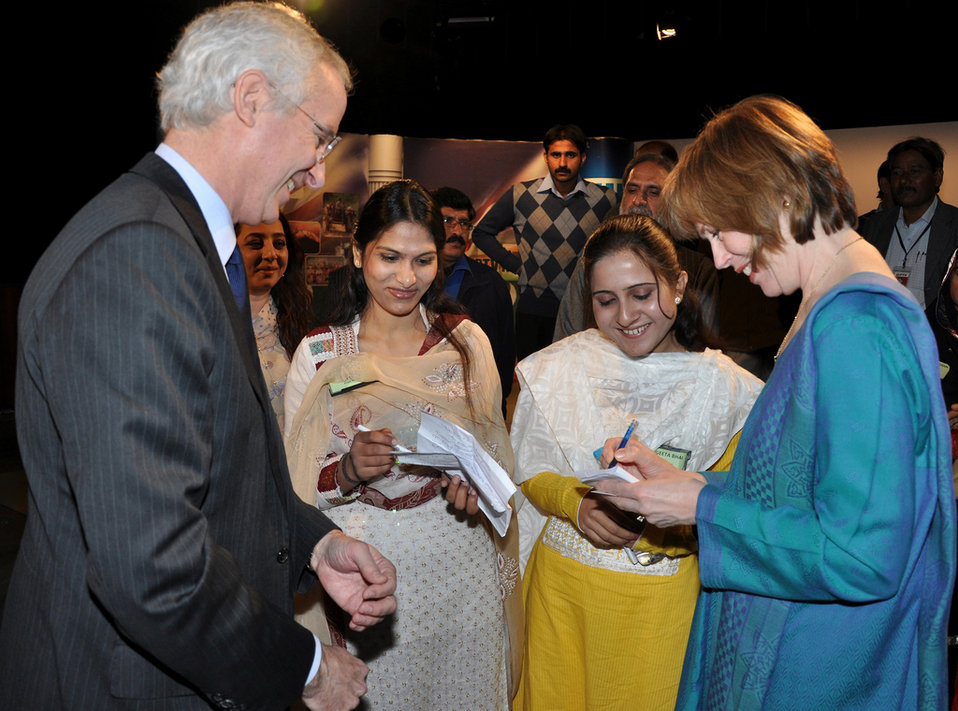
USAID’s Merit-and Needs-based Scholarship Program

Islamabad, January 25, 2011 - U.S. Ambassador Cameron Munter and his wife, Dr. Marilyn Wyatt engage with two students from USAID’s Merit-and Needs-based Scholarship Program after their town hall meeting.